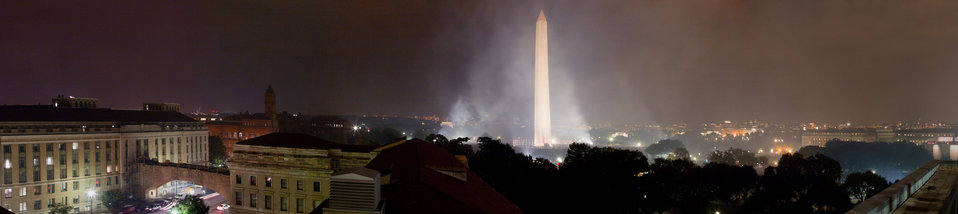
Smoke hangs in the air after Independence Day fireworks at the National Mall, in Washington, DC, on Monday, July 4, 2011. USDA Panorama by Lance Cheung.